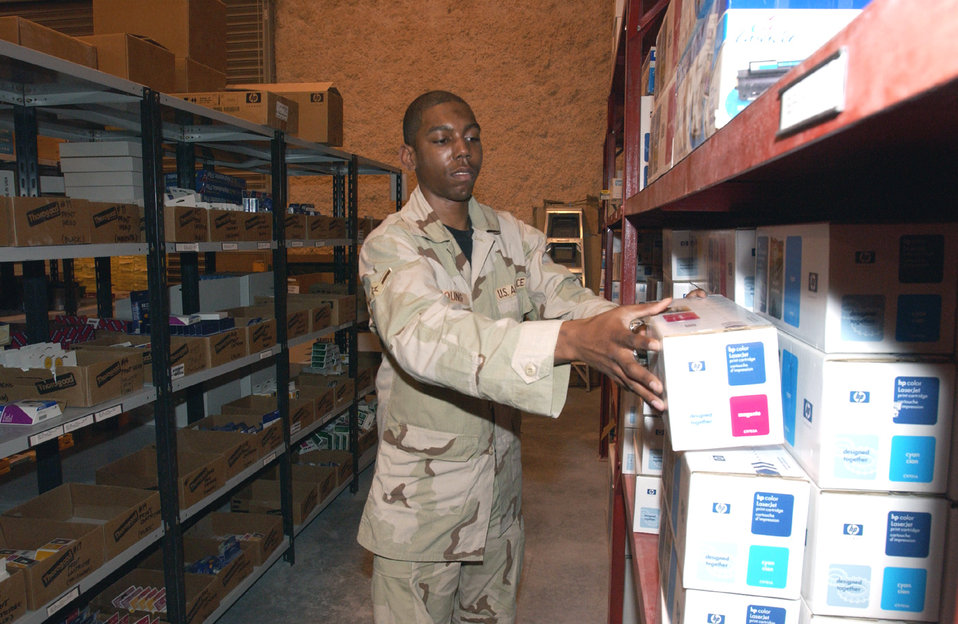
Taking inventory

SOUTHWEST ASIA -- Airman Joseph Young Jr. takes inventory at a forward-deployed location. Airman Young is assigned to the 379th Expeditionary Logistics Readiness Squadron and is deployed from Pope Air Force Base, N.C.